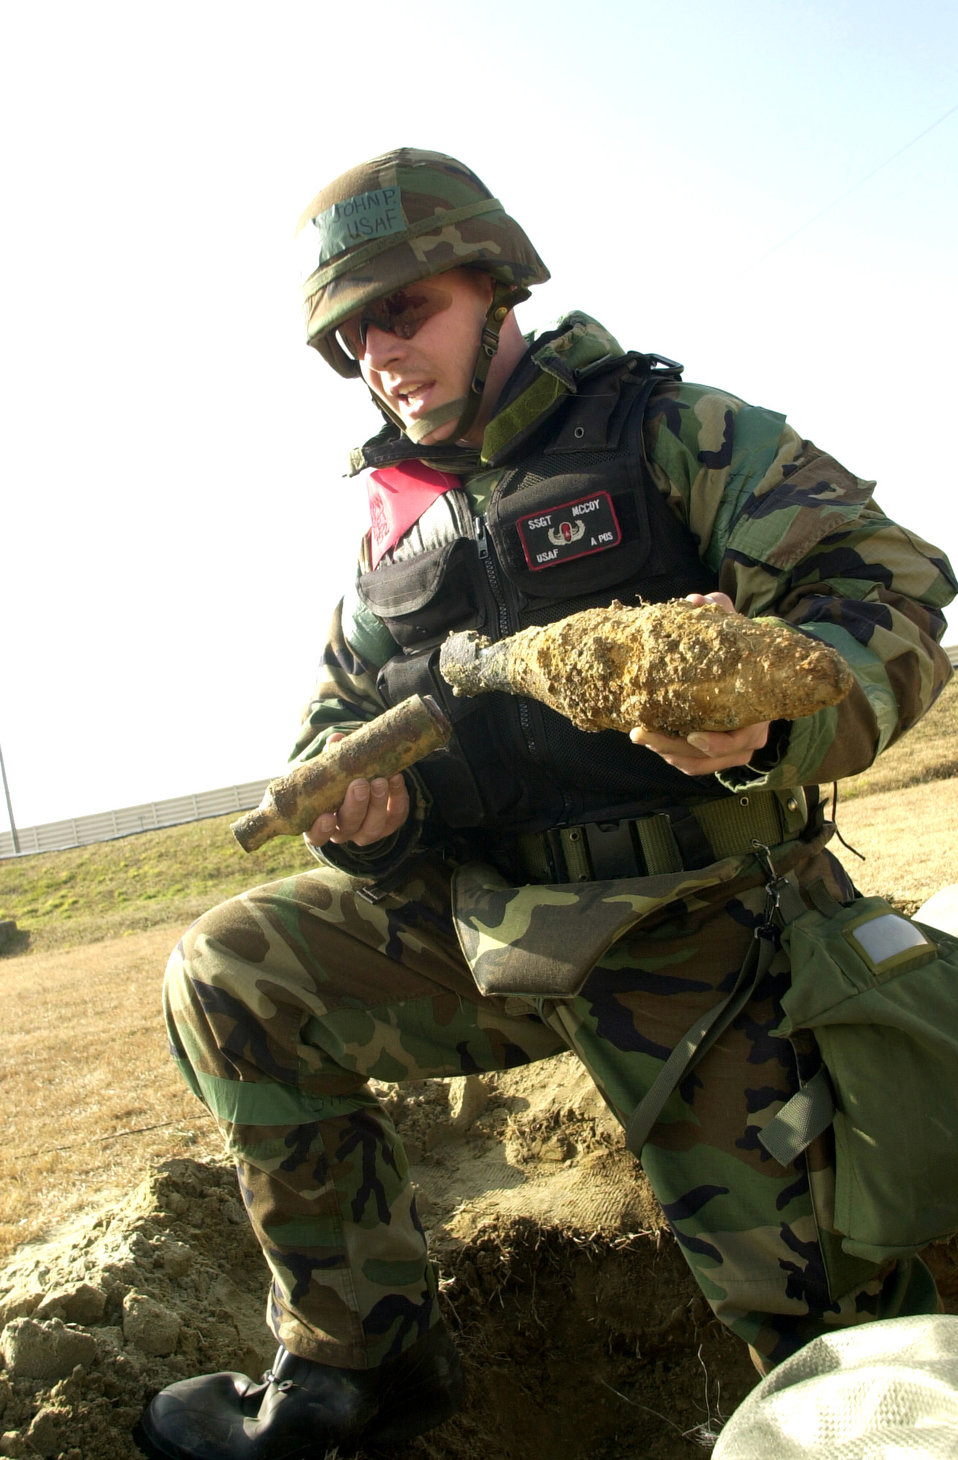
Exploded explosive

KUNSAN AIR BASE, South Korea -- Staff Sgt. John McCoy examines the remains of an exploded ordnance here Dec. 16. Sergeant McCoy is assigned to the 8th Civil Engineer Squadron.